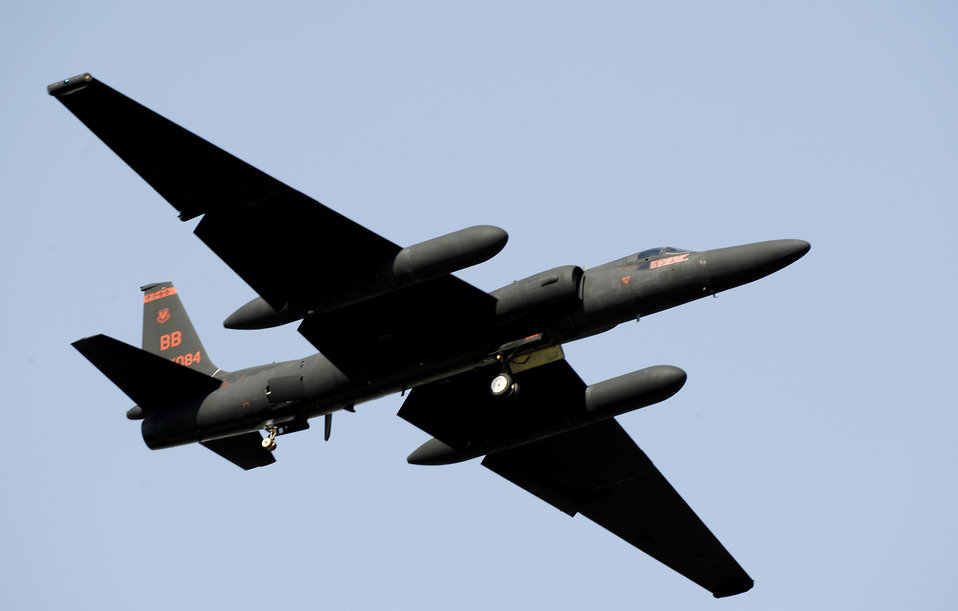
Show off

A U-2